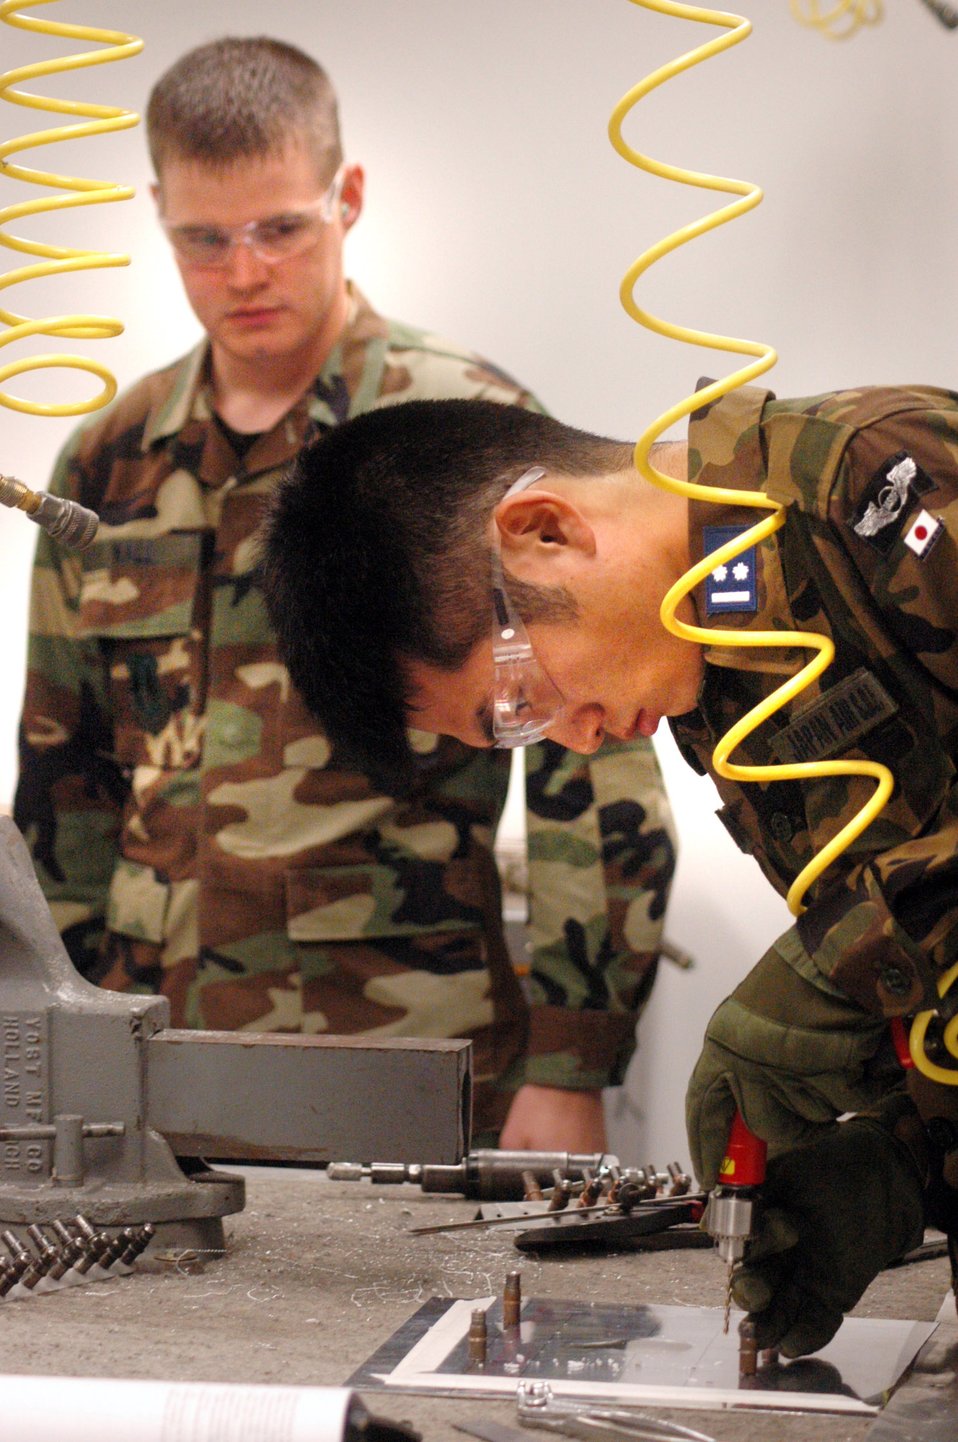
JASDF personnel learn aircraft battle damage repair

Staff Sgt. Jacob Wall observes as 1st Lt. Yusuke Asano repairs a piece of sheet metal with simulated battle damage Feb. 14. Five members of the Japan Air Self-Defense Force visited Robins Air Force Base, Ga., to improve their battle-damage repair skills. Sergeant Wall is with the 653rd Combat Logistics Support Squadron.